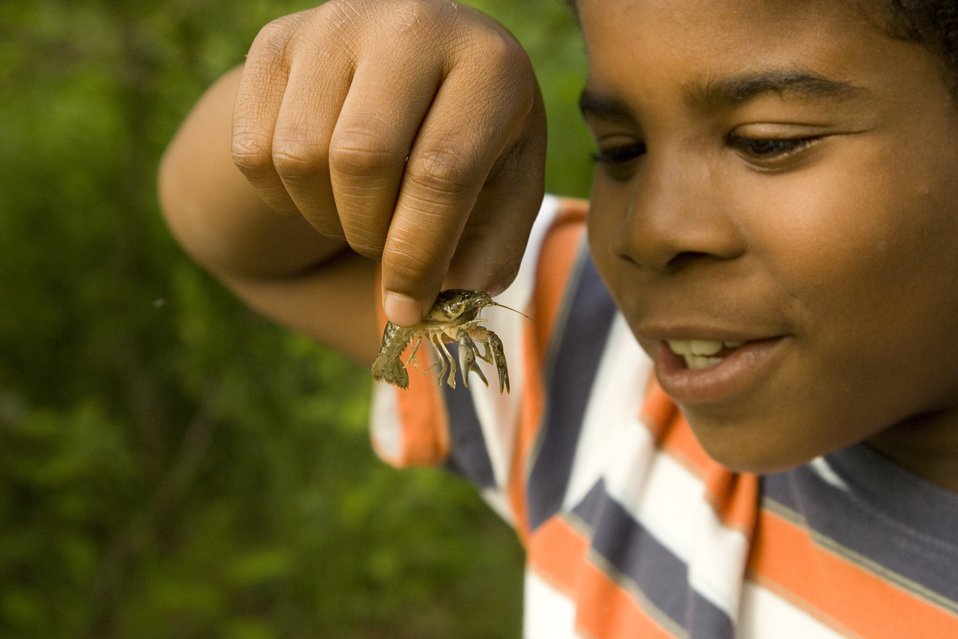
Child with crayfish